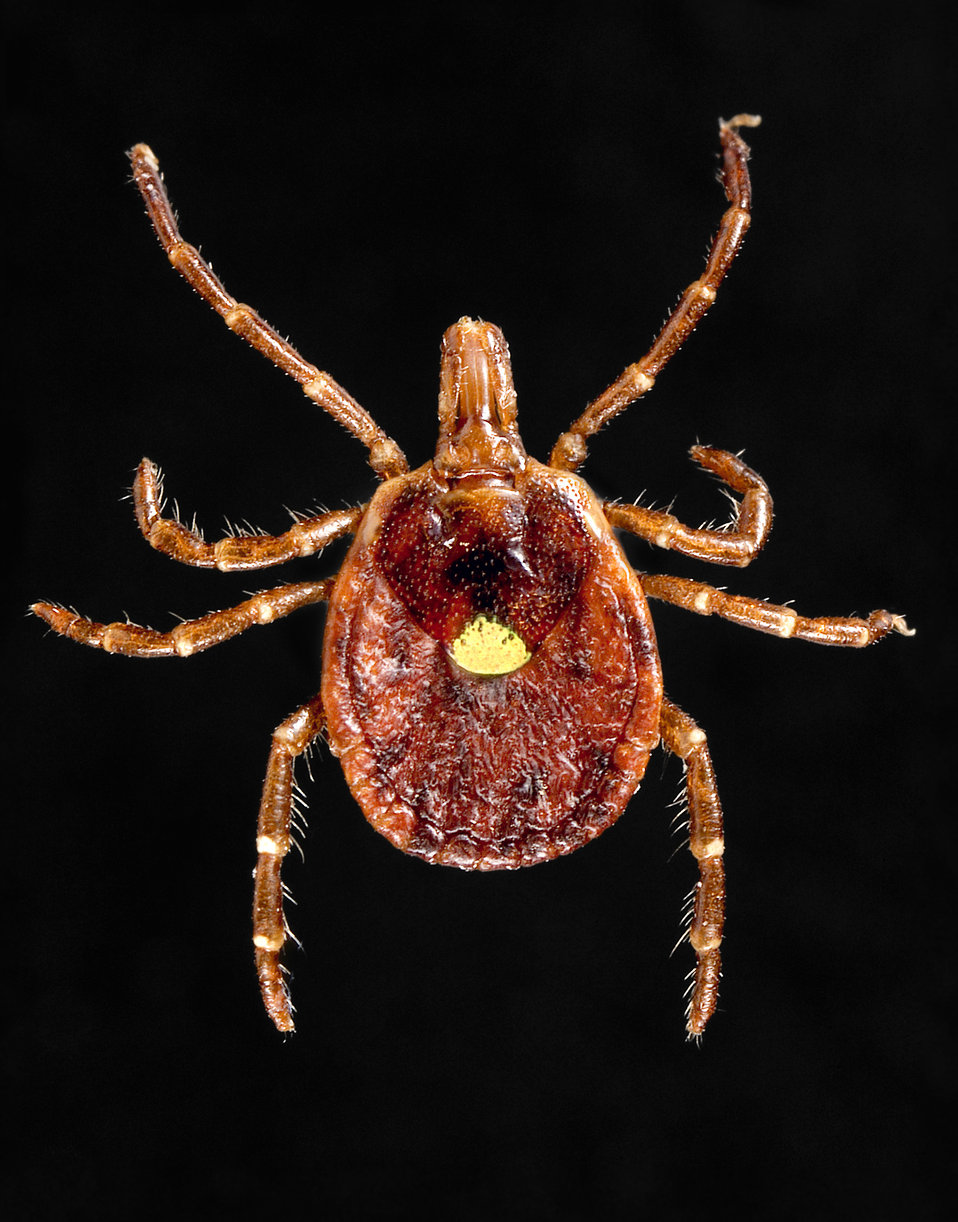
This photograph depicted a dorsal view of a female "lone star tick", Amblyomma americanum. Note the characteristic 'lone star' marking located centrally on its dorsal surface, at the distal tip of its scutum. To view additional images related to this tick specie, see PHIL 4407, 8676 through 8681, and 8683 through 8685.